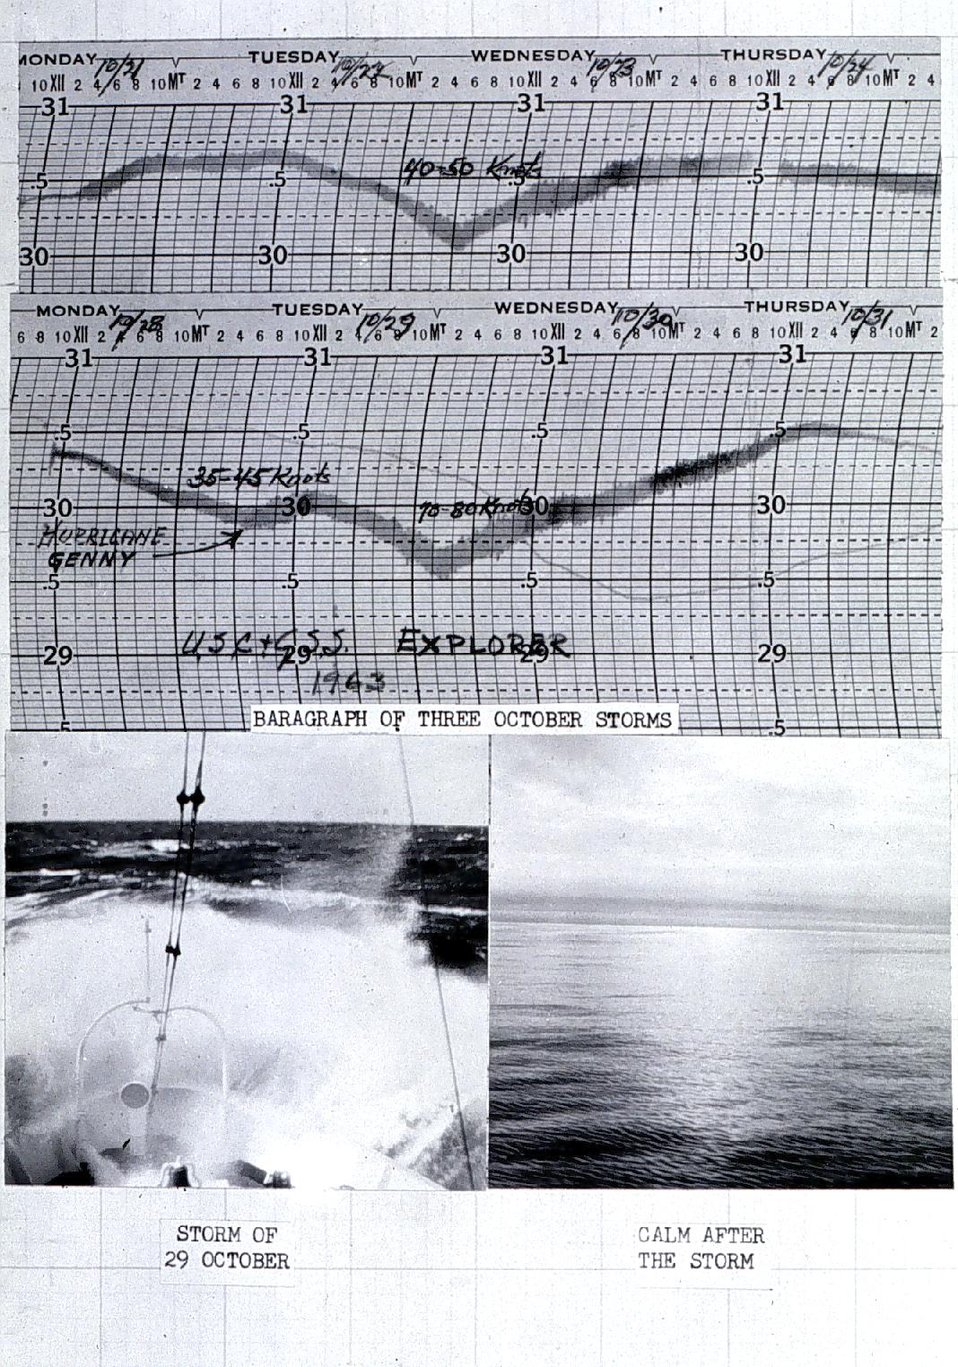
Annotated barograph showing storm passages. EXPLORER cable survey to St. Hilaire, France